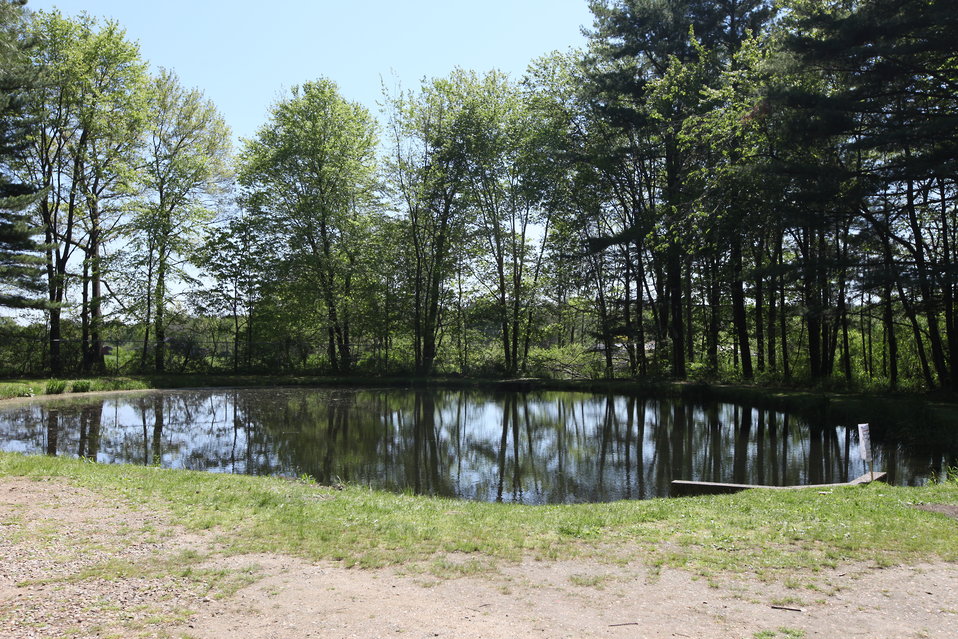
Youth Fishing Day 2012

Megan Nagel/USFWS